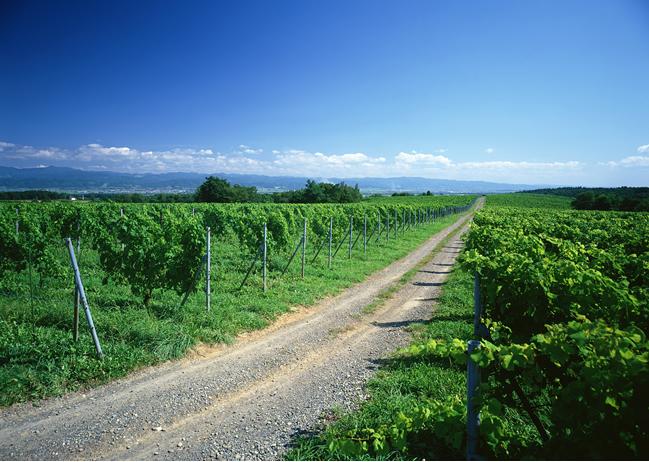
Uploaded by request of BAI Yang

Taken in a small village in HeNan Province of CHINA

The photo was taken in my hometown.